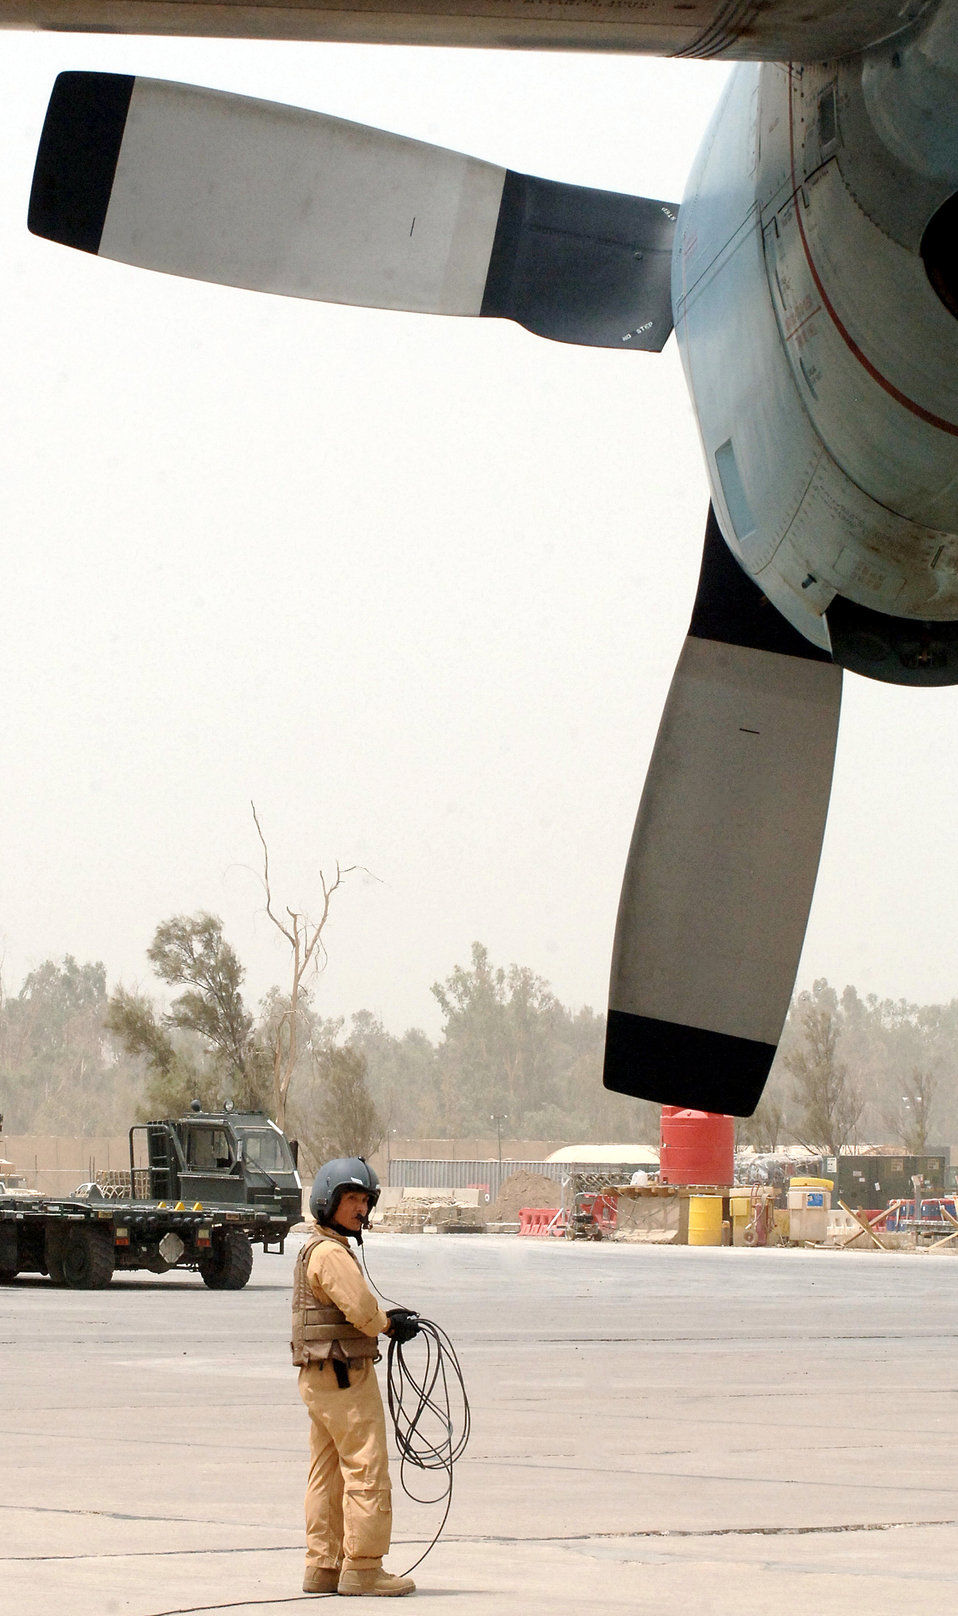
Japanese C-130 lands at Sather

An Airman from the 447th Air Expeditionary Group loads a baggage pallet onto a Japan Air Self Defense Force C-130 on the ramp at Sather Air Base, Iraq, on July 31. The aircraft was the first of its kind from Japan to land at Baghdad International Airport. The blue C-130, painted that way for its affiliation with the United Nations, will now be a regular sight at Sather.